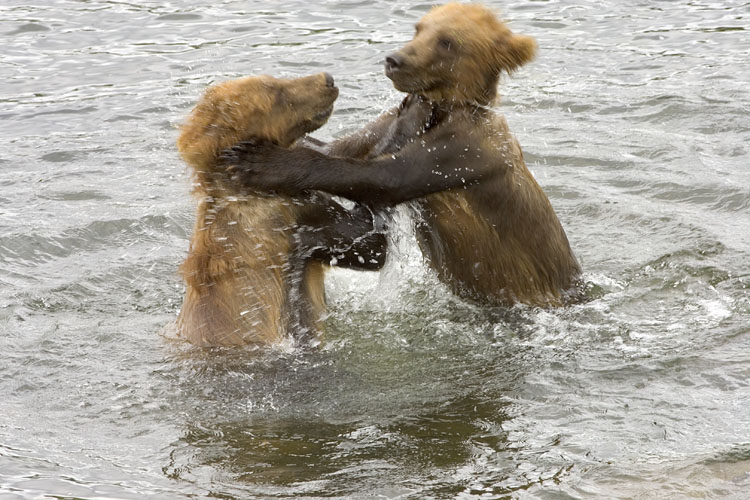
Kodiak Brown Bears

Playful Kodiak Bears